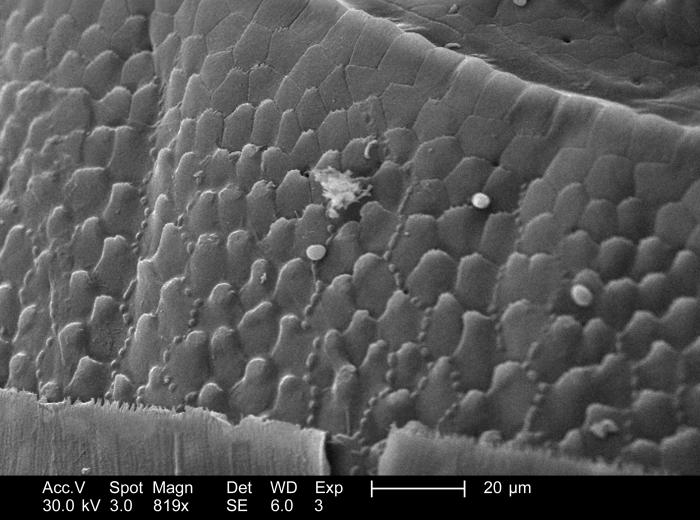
Magnified 819x, this scanning electron micrograph (SEM) depicted the many variations in patterns displayed on the chitinous exoskeletal surface of this millipede that had been found deceased on the ground in the Decatur, Georgia suburbs.